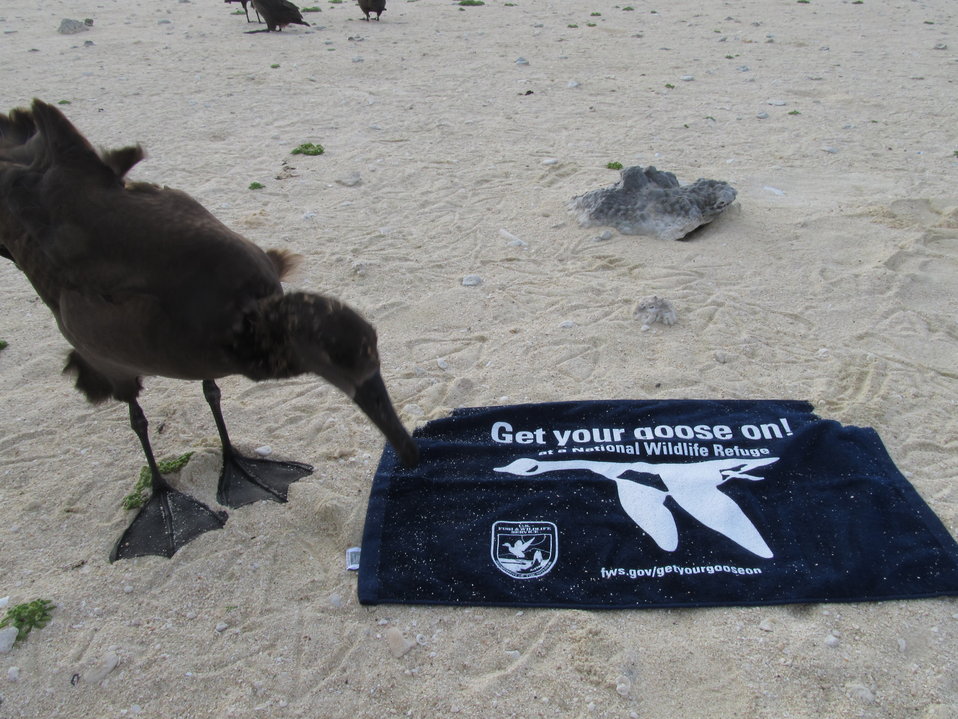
Get Your Goose On! - Albatross Style

Photo taken at Laysan Island in the Papahanaumokuakea Marine National Monument, Hawaiian Islands National Wildlife Refuge. Laysan is located approximately 800 miles northwest of Honolulu, Hawaii and is a remote field camp staffed year round for habitat restoration and population monitoring.